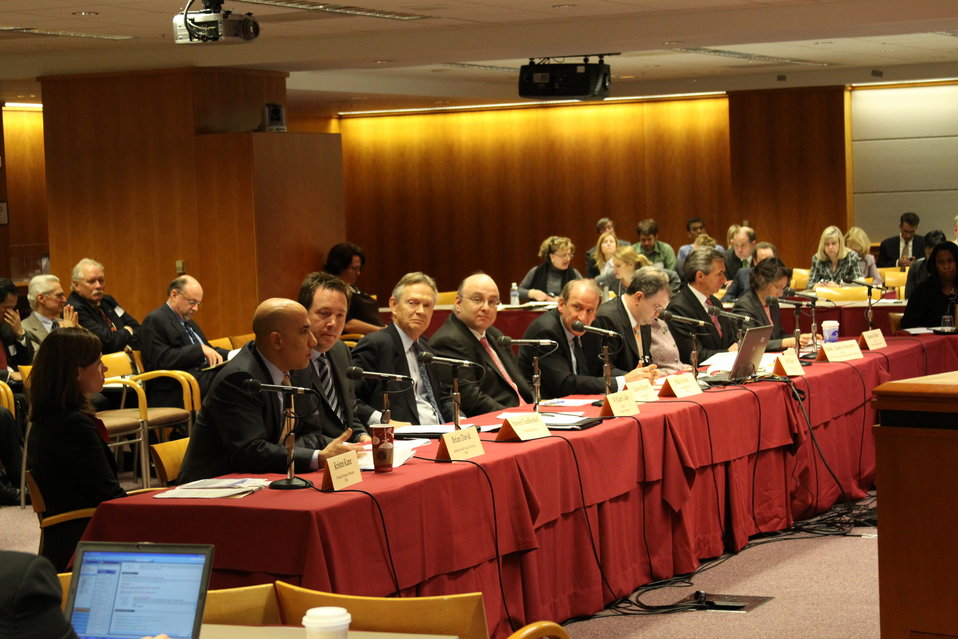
November Open Meeting